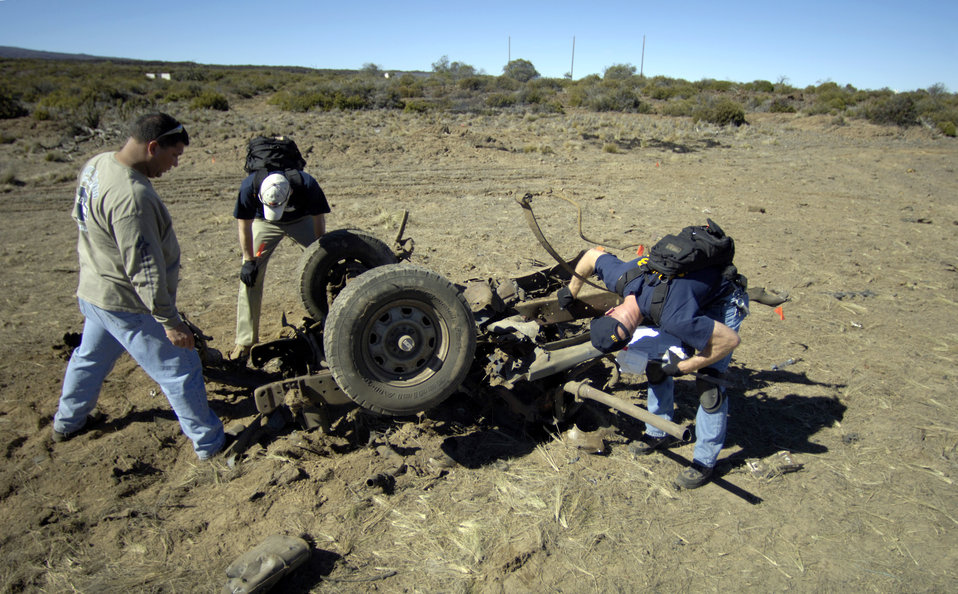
Air Force attends FBI training

POHAKULOA TRAINING AREA, Hawaii (AFPN) -- Students search for evidence on the blown-up frame of a vehicle at a bomb scene scenario. The FBI, along with Army cadre, conducted a large vehicle post blast investigator's course here. It included instruction on investigative techniques and evidence collection.